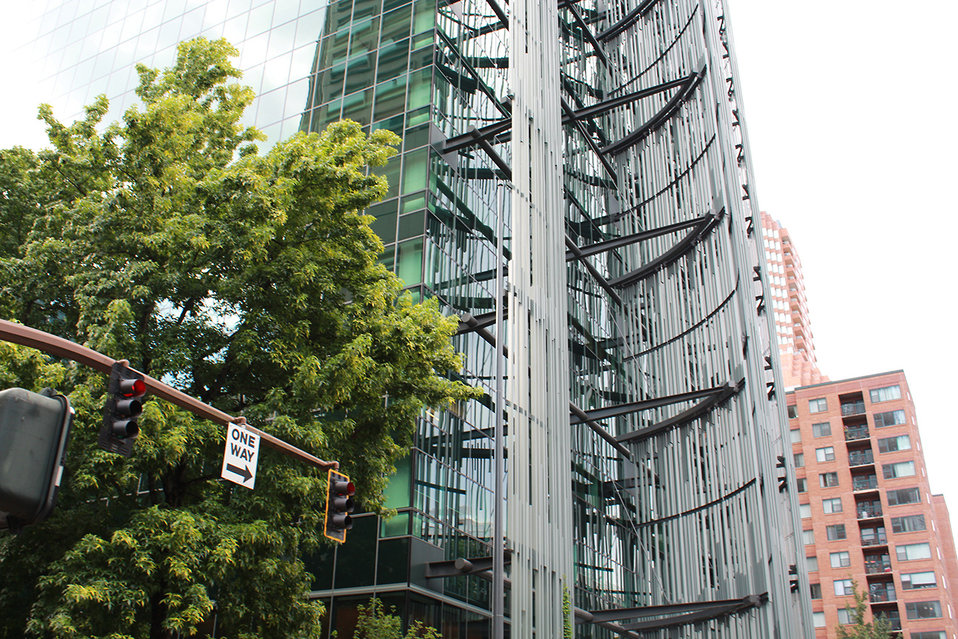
This is an image of the U.S. Department of Agriculture (USDA) U.S. Forest Servcie research facility in Portland, OR.